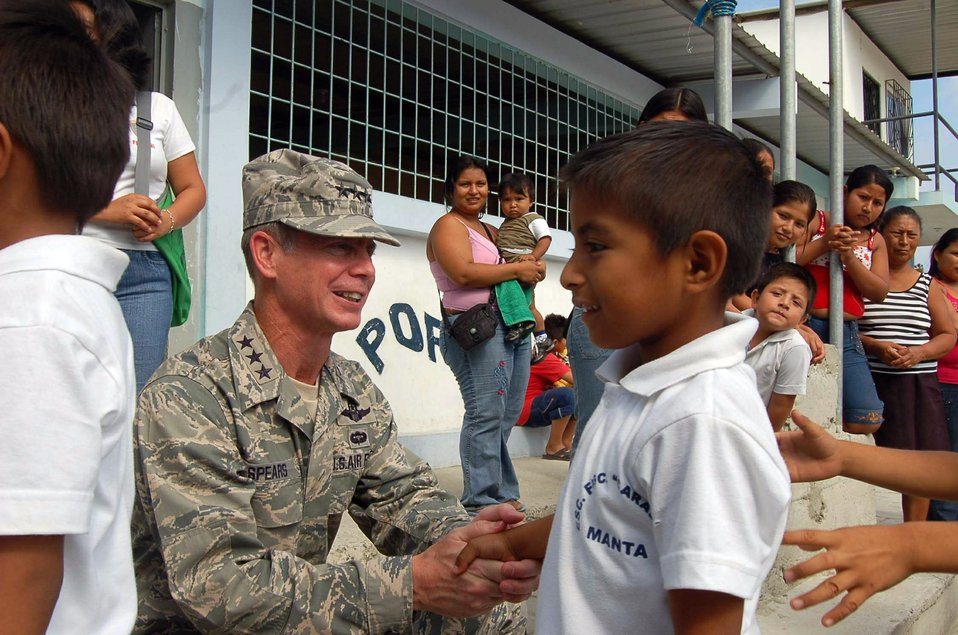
Airmen visit school in Ecuador, donate supplies

Lt. Gen. Glenn F. Spears meets students after he presented the Southern Command's Humanitarian Assistance Program donation of school supplies Dec. 10 at the San Juan Elementary School in Ecuador. General Spears is the Southern Command deputy commander.